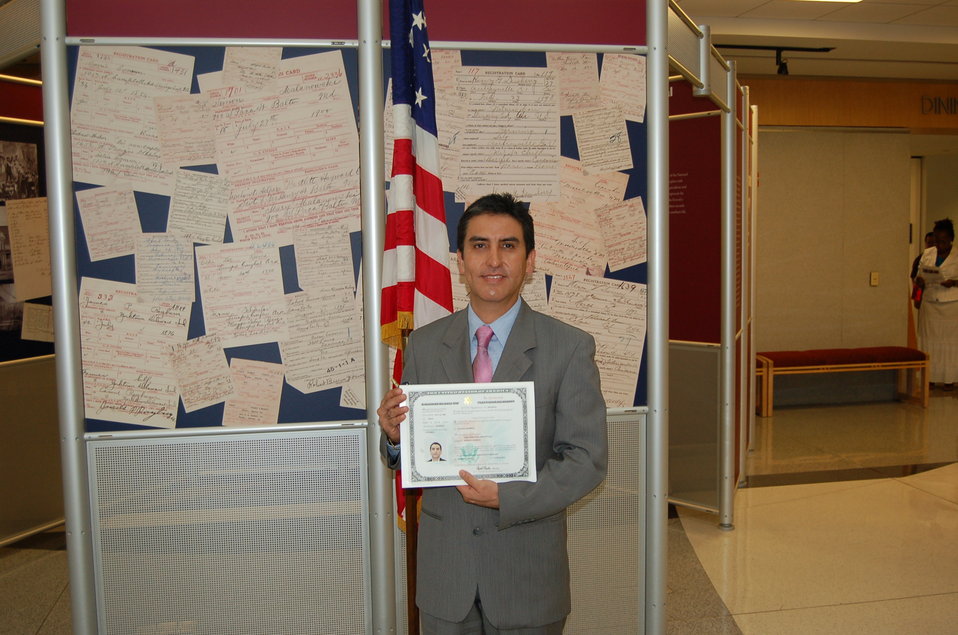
New Citizens